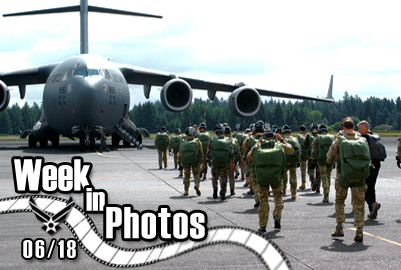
Air Force Week in Photos for June 18, 2010, highlights photos from around the Air Force. In this photo by Airman Leah Young, servicemembers from the 22nd Special Tactics Squadron board a C-17 Globemaster III June 14, 2010, at Joint Base Lewis-McChord, Wash., to conduct a jump exercise.